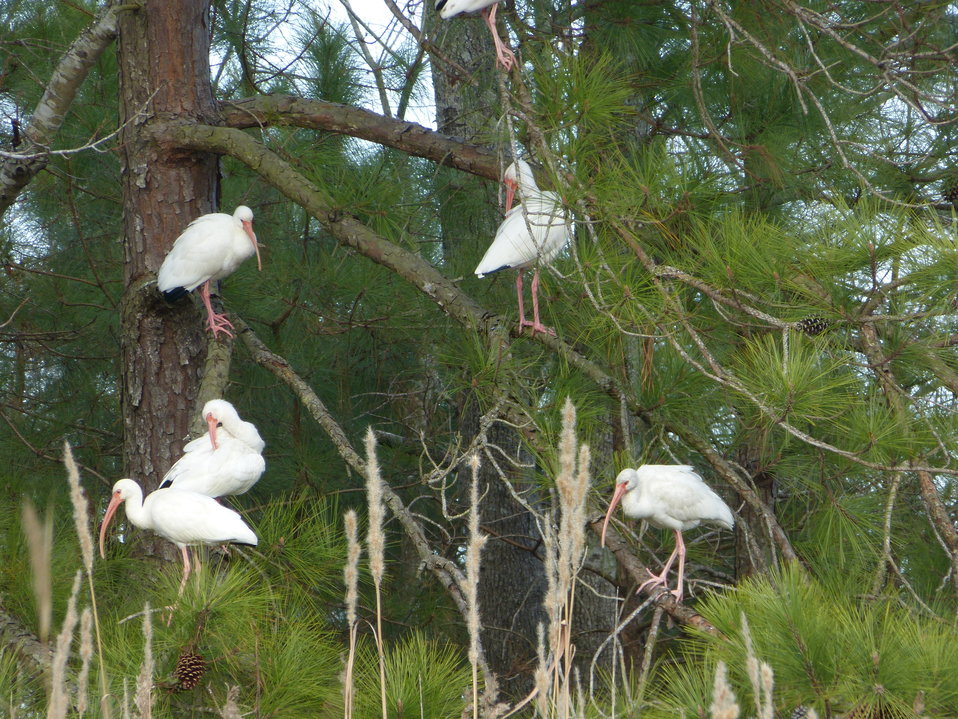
White ibis in the trees

White ibis at Mattamuskeet National Wildlife Refuge in North Carolina.